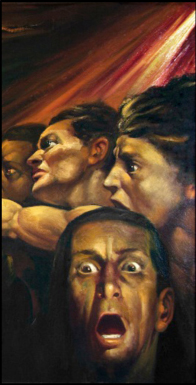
Detail of 'Voz del Pueblo, Voz de Dios' painting, by José Suárez Olvera